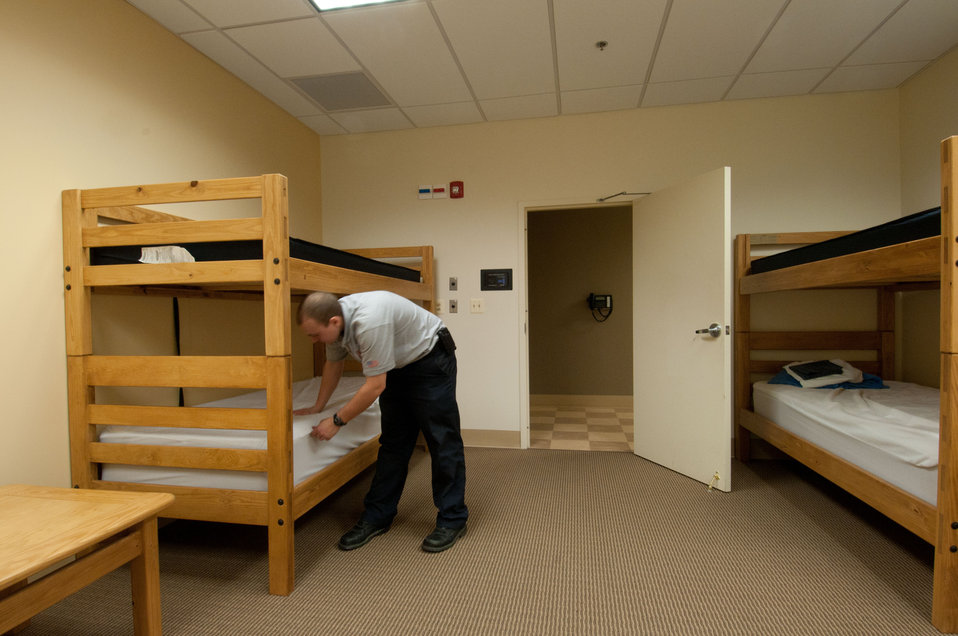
Technician Jonathan Bankston streightens up a bunkbed in one of several crew quarters at the Catlett Volunteer Fire - Rescue, Station 7, in Catlett, VA, on Wednesday, May 4, 2011.